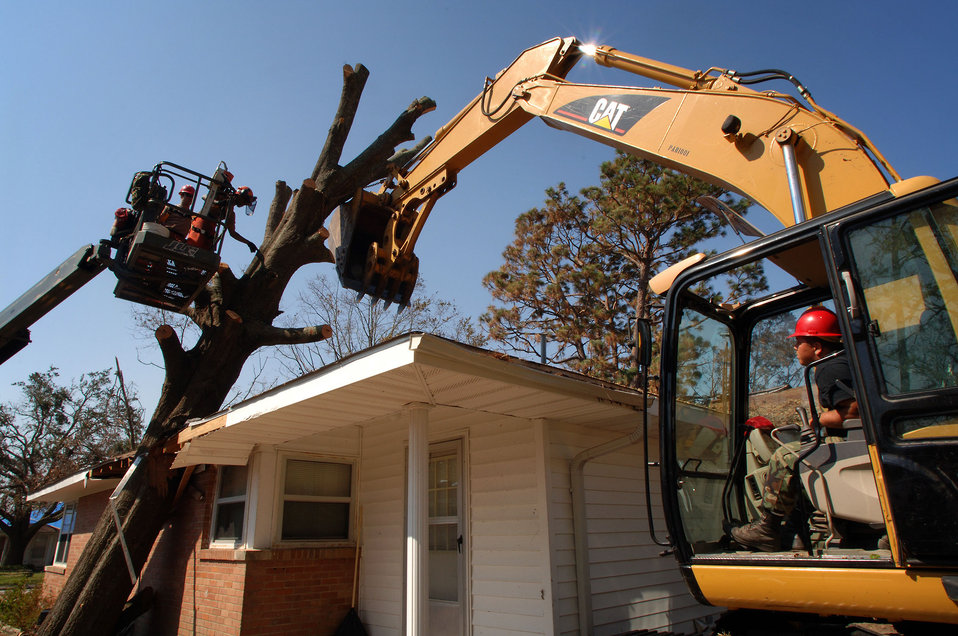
Keesler cleanup going well

KEESLER AIR FORCE BASE, Miss. -- Airmen with the 823rd Red Horse Squadron from Hurlburt Field, Fla., start another day of clearing and removing fallen trees from the base housing area here. More than 90 of the squadron's Airmen are deployed here to help with the base's hurricane recovery effort.